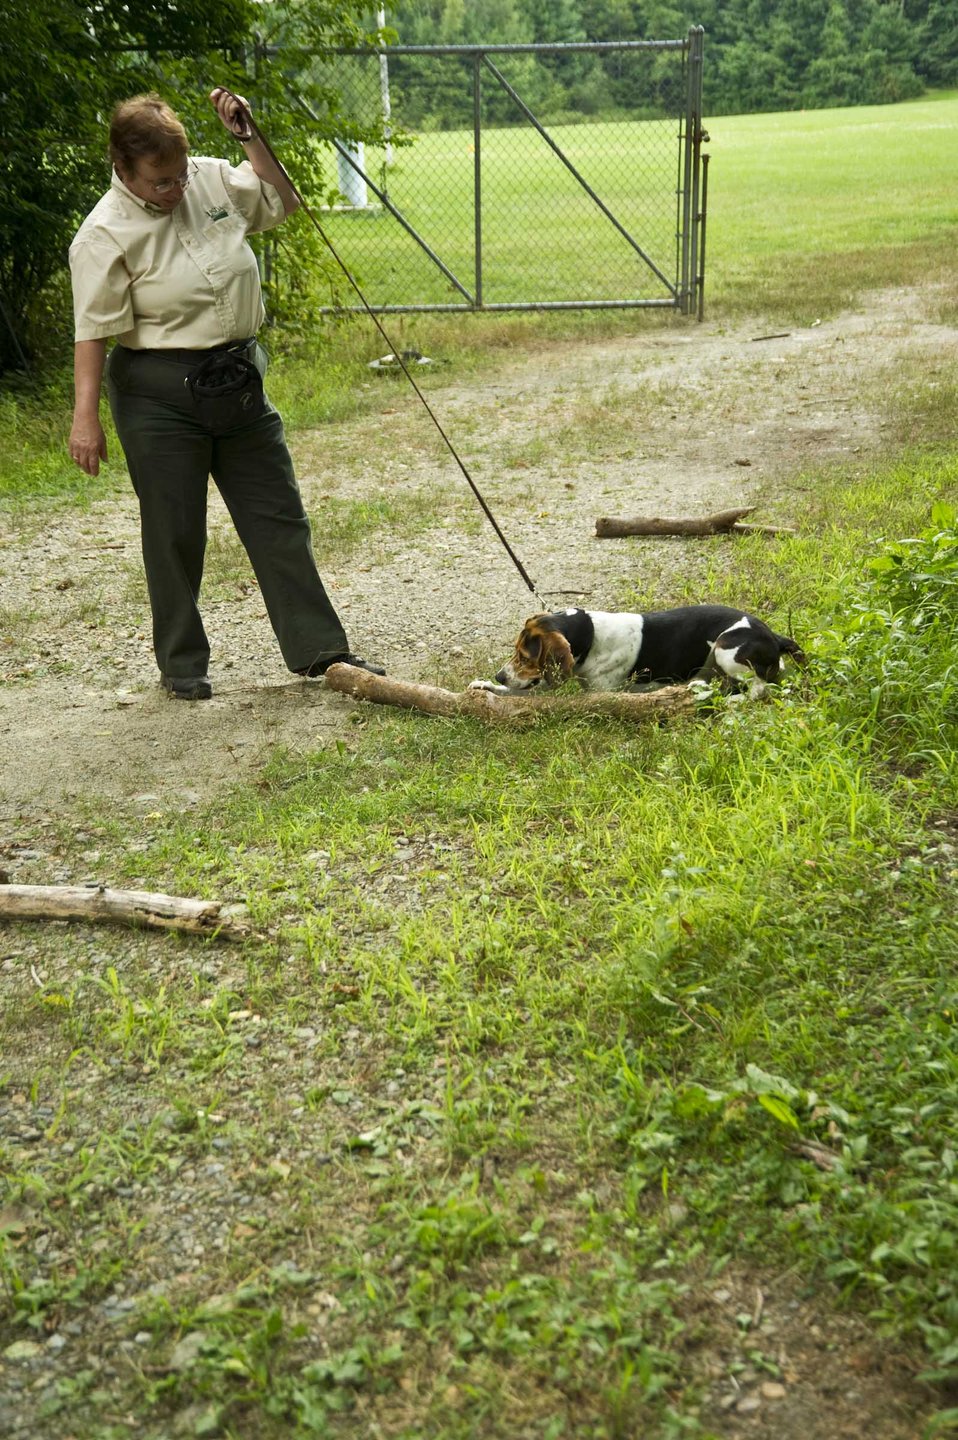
U.S. Department of Agriculture (USDA) Animal and Plant Health Inspection Service (APHIS) training specialist and Project Team Leader Monica Errico rewards Asian Longhorned Beetle (ALB) Detector Dog Merlin for his successful detection of beetle “frass” or excrement in Worcester, MA on Aug. 1, 2012. The ALB is an invasive insect that is killing trees in Massachusetts, New York, New Jersey and Ohio. Four dogs are currently being trained to recognize beetle “frass” that the beetle leaves behind. This study is part of an important mission to protect neighborhood trees and this country’s valuable forest resources from this harmful pest.